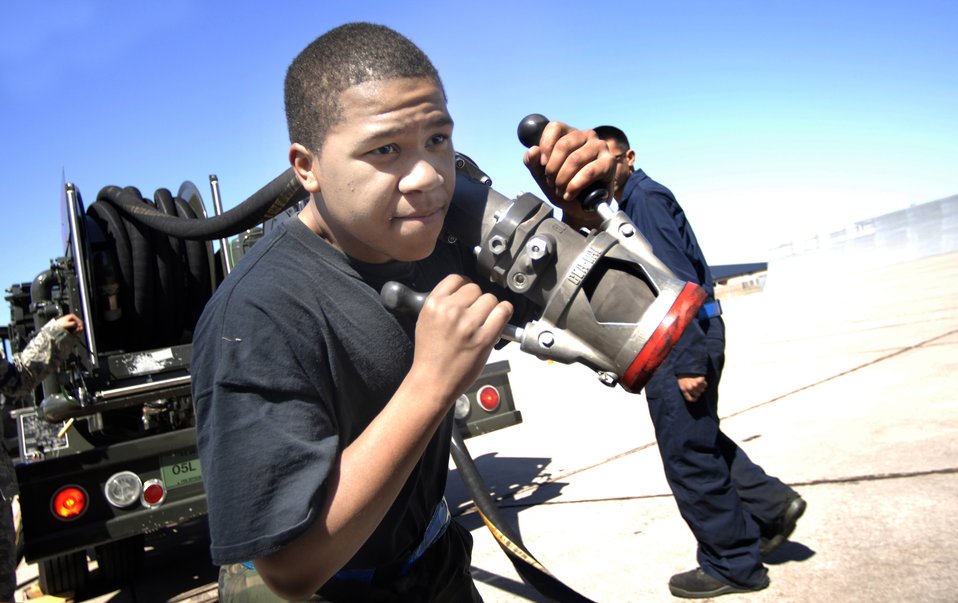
B-1B achieves first supersonic flight using synthetic fuel

Airman 1t Class Charles Edwards pulls out a hose to inject fuel into a B-1B Lancer March 19 at Dyess Air Force Base, Texas. The bomber was the Air Force's first aircraft to fly at the supersonic speeds using a 50/50 blend of synthetic and petroleum fuel. The supersonic flight occured over the White Sands Missile Range airspace in south-central New Mexico, but took off from Dyess AFB. Airman Edwards is a crew chief with the 7th Aerial Maintenance Squadron.